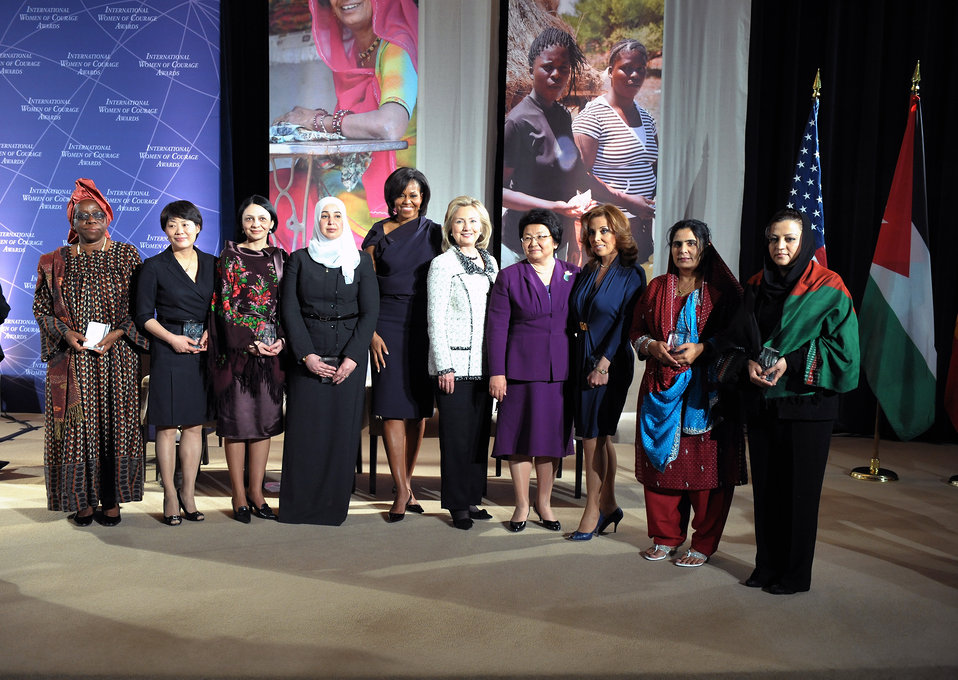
Secretary Clinton and First Lady Obama With 2011 International Women of Courage Award Honorees

U.S. Secretary of State Hillary Rodham Clinton, center right, and First Lady of the United States Michelle Obama, center left, pose for a photo with the honorees of the 2011 International Women of Courage Awards at the U.S. Department of State in Washington, D.C., on March 8, 2011.